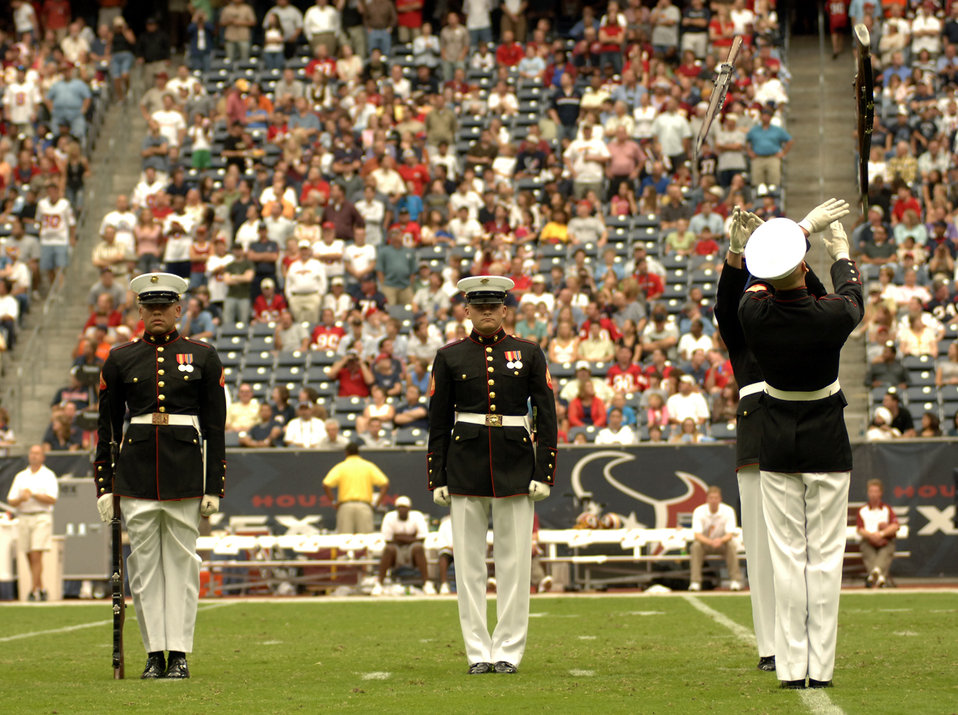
Servicemembers shine during NFL game

The Marine Corps Silent Drill Team from Washington, D.C., performs in front of more than 70,000 fans at Reliant Stadium in Houston at halftime of the Houston Texans and Washington Redskins National Football League game Sept. 24. The Texans honored military servicemembers in their Salute to the Military day.